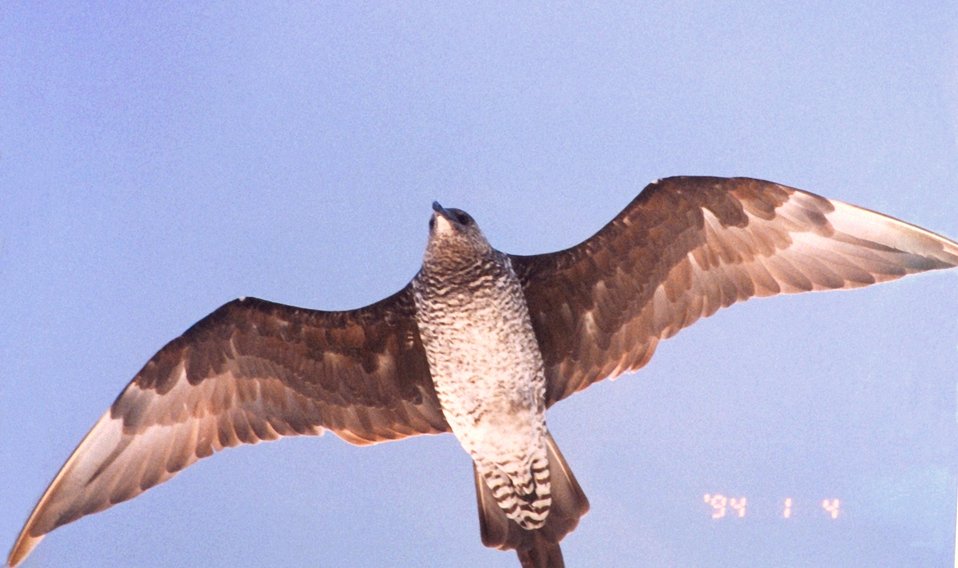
Sea bird hovering overhead.